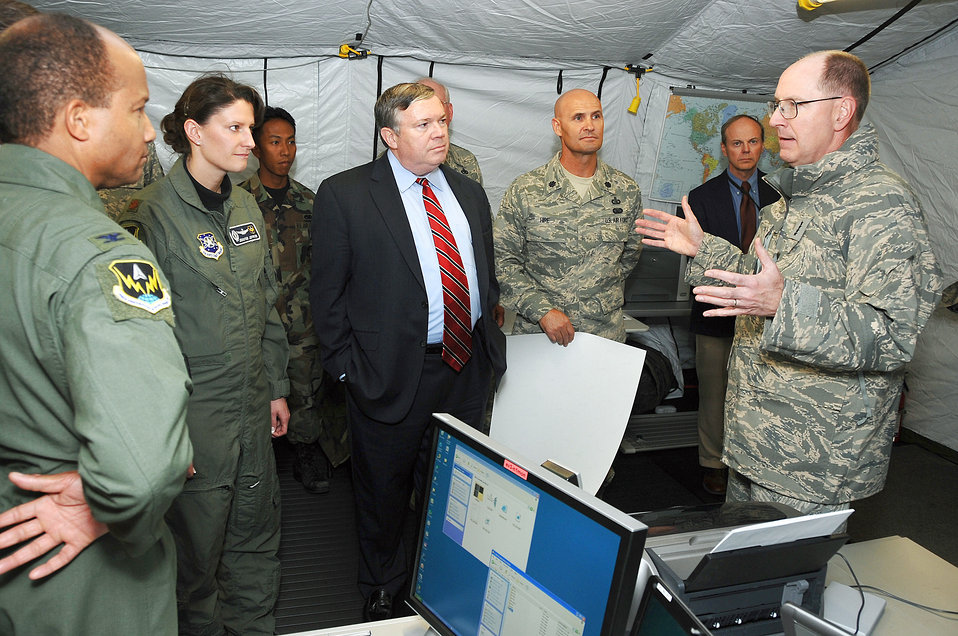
Eagle Vision lands at Peterson

Gen. C. Robert